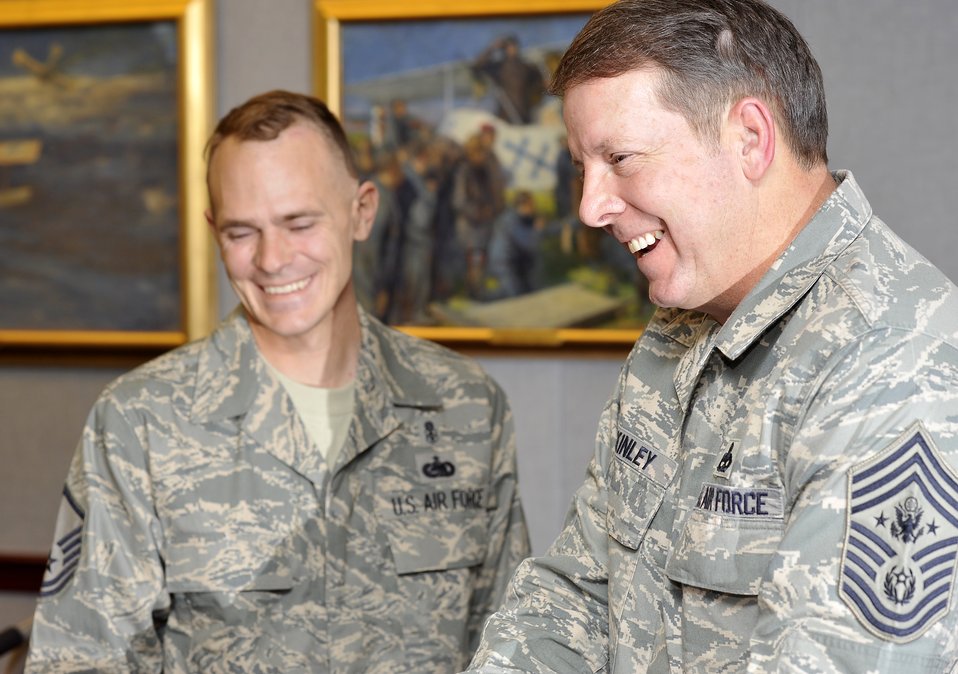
Airman receives Purple Heart

Master Sgt. David Webber chats with Chief Master Sgt. of the Air Force Rodney McKinley Jan. 8 in the Pentagon prior to Sergeant Webber receiving the Purple Heart. The medal was presented by Air Force Chief of Staff Gen. Norton Schwartz.